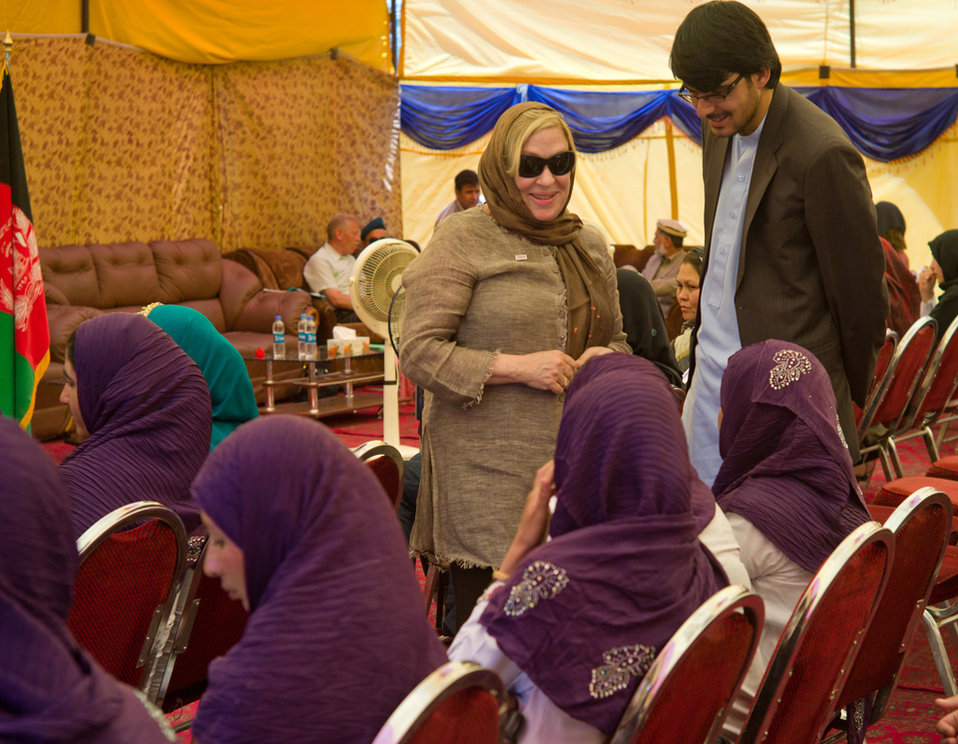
Carol talking to Graduates